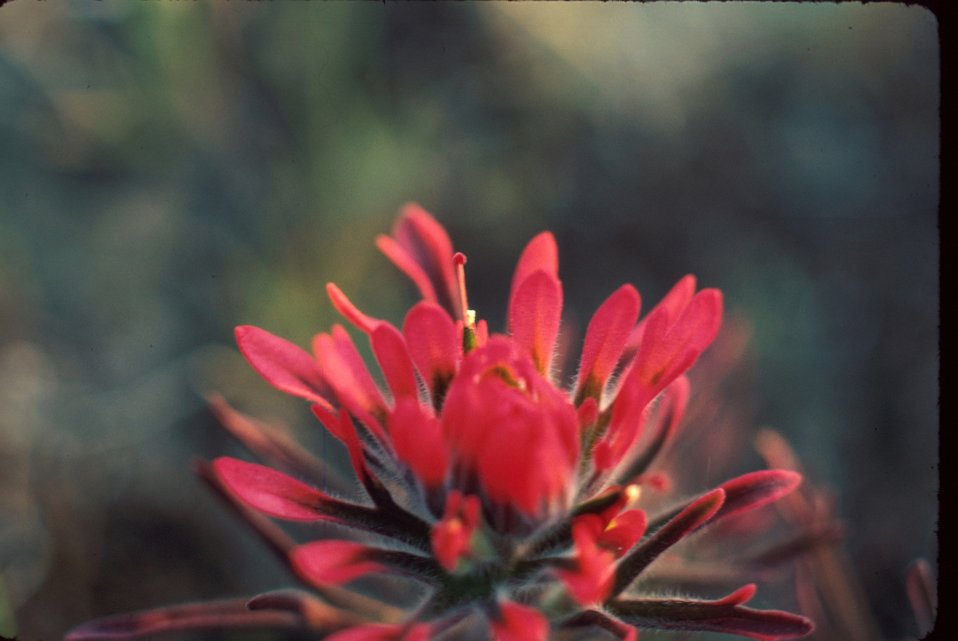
Castilegia Indian paintbrush Wildflower